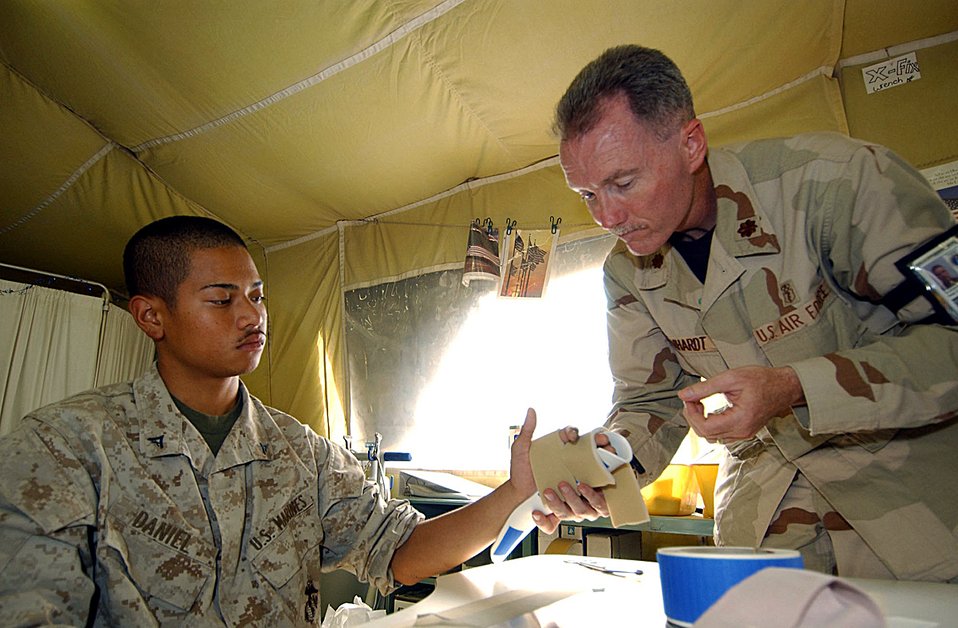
Physical medicine team keeps 'sprains and strains' down

BALAD AIR BASE, Iraq -- Maj. Peter Reinhardt fits a splint for Marine Lance Cpl. Kai Daniel, who was visiting the Air Force theater hospital here from Tikrit. Major Reinhardt is an occupational therapist with the 332nd Expeditionary Medical Group here.